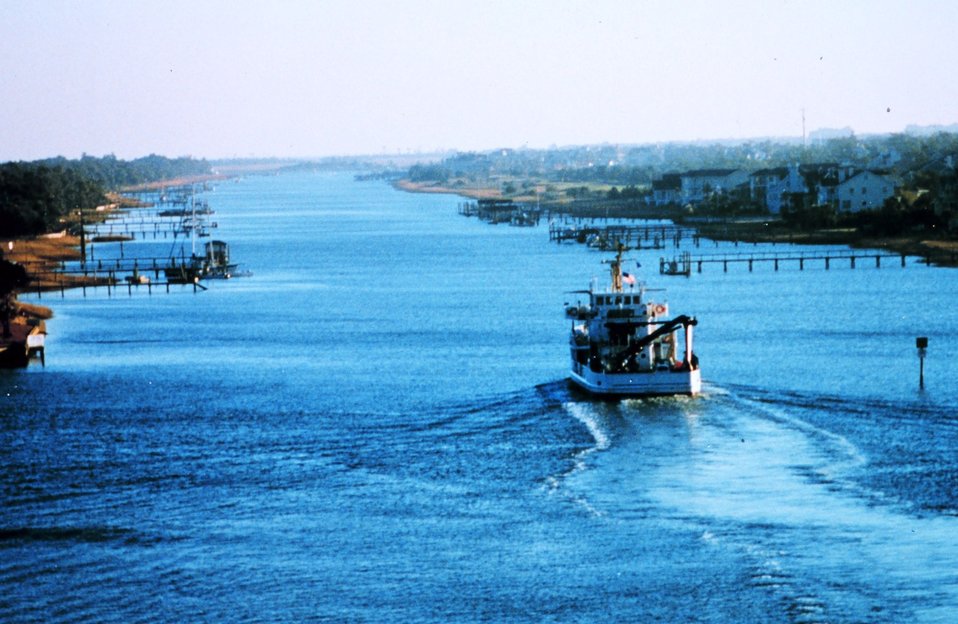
NOAA Ship FERREL in Intracoastal Waterway north of Charleston